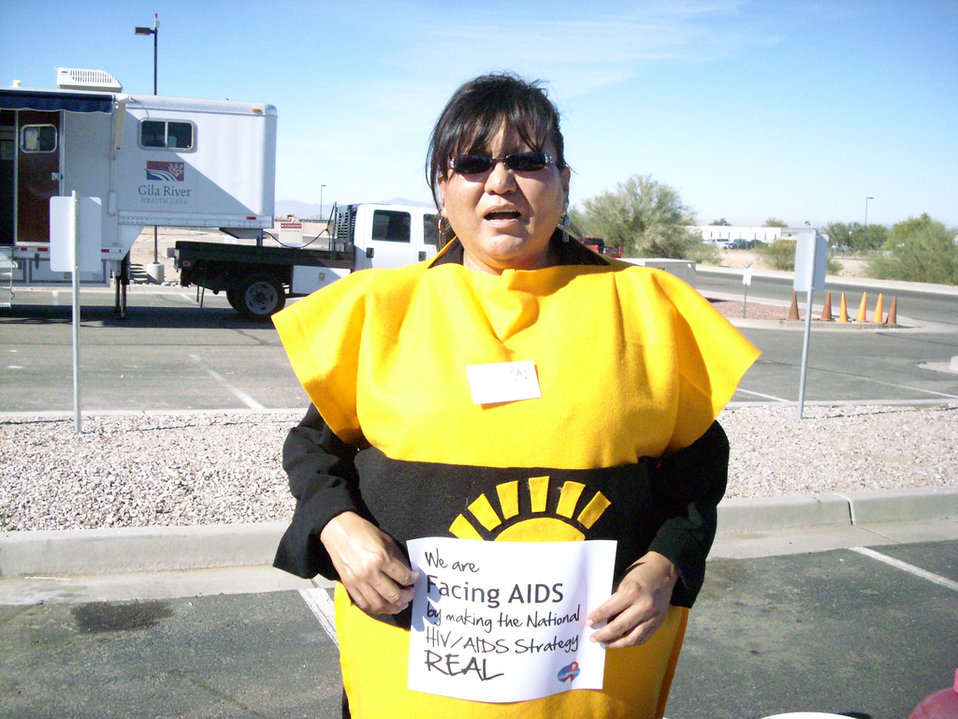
We are Facing AIDS through NHAS-12-28